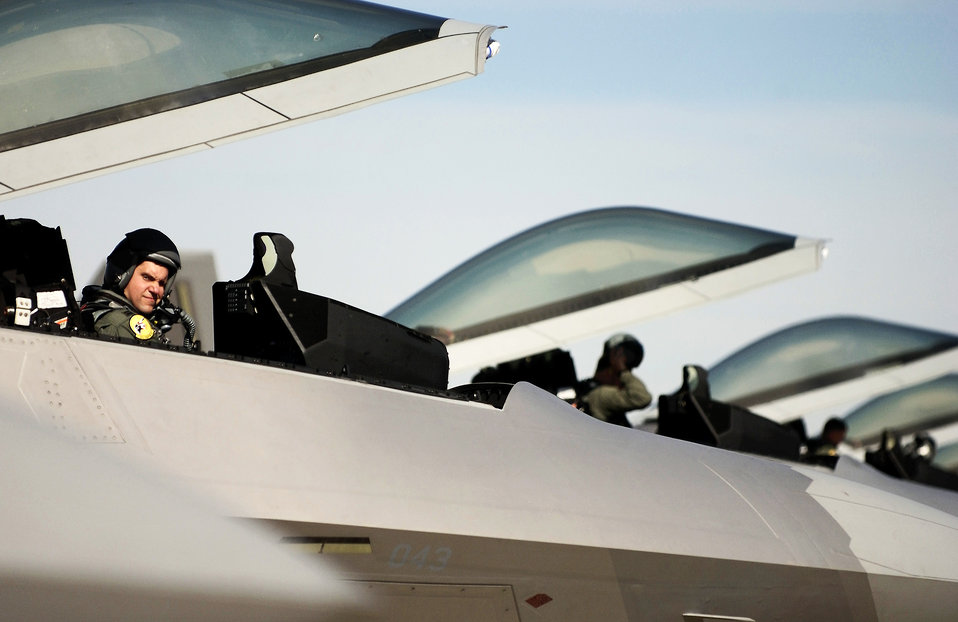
Combat Hammer

HILL AIR FORCE BASE, Utah -- Capt. Jeoff Lohmiller prepares to fly the first F/A-22 Raptor aerial mission of the Combat Hammer exercise here Oct. 17. The captain is with the 27th Fighter Squadron at Langley Air Force Base, Va. The squadron came here on its first deployment, Oct. 15. The deployment has a twofold goal: complete a deployment and to generate a combat-effective sortie rate away while deployed.